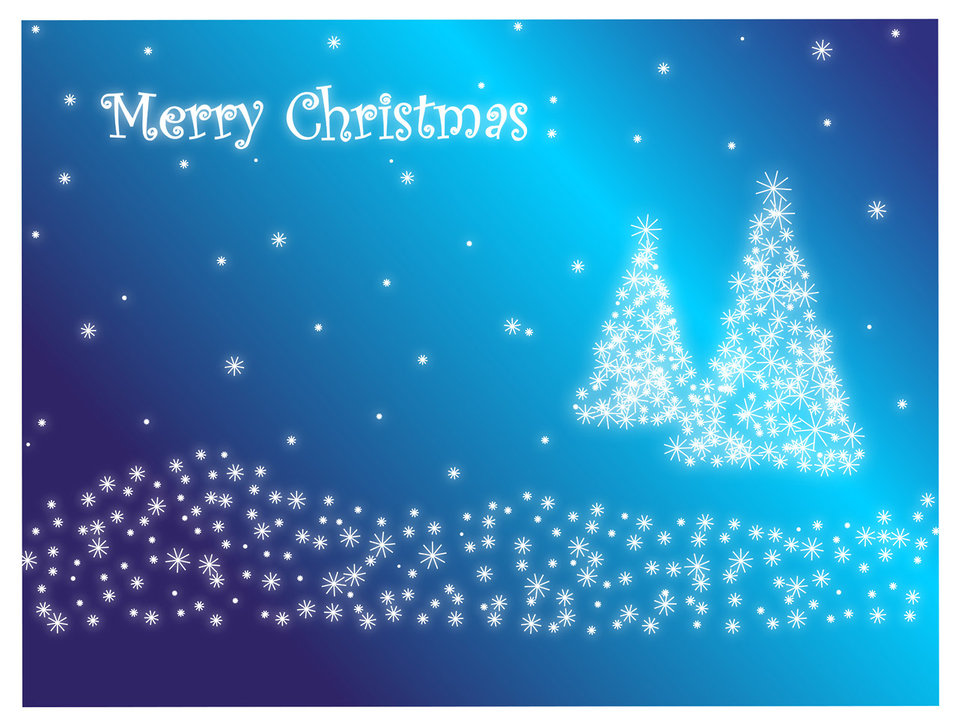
Merry christmas in blue

White christmas trees on a blue background.